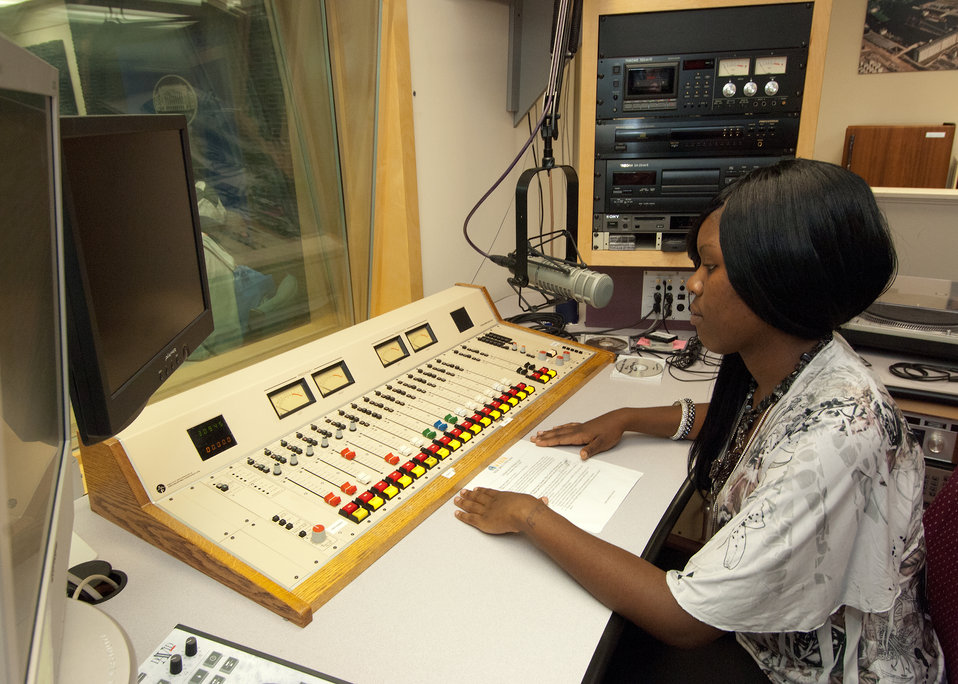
While on a Career Opportunity, seniors from Calvert High School Calvert, Texas tour the television studio United States Department of Agriculture (USDA) as part of a senior trip sponsored by the Farm Service Agency “Ag in the Classroom” program Monday, May 23, 2011, in Washington, DC. Senior from Calvert High School Calvert, Texas LaKendra Crowley has an opportunity to view the radio studio in the USDA Creative Media and Broadcast Center from the control booth.